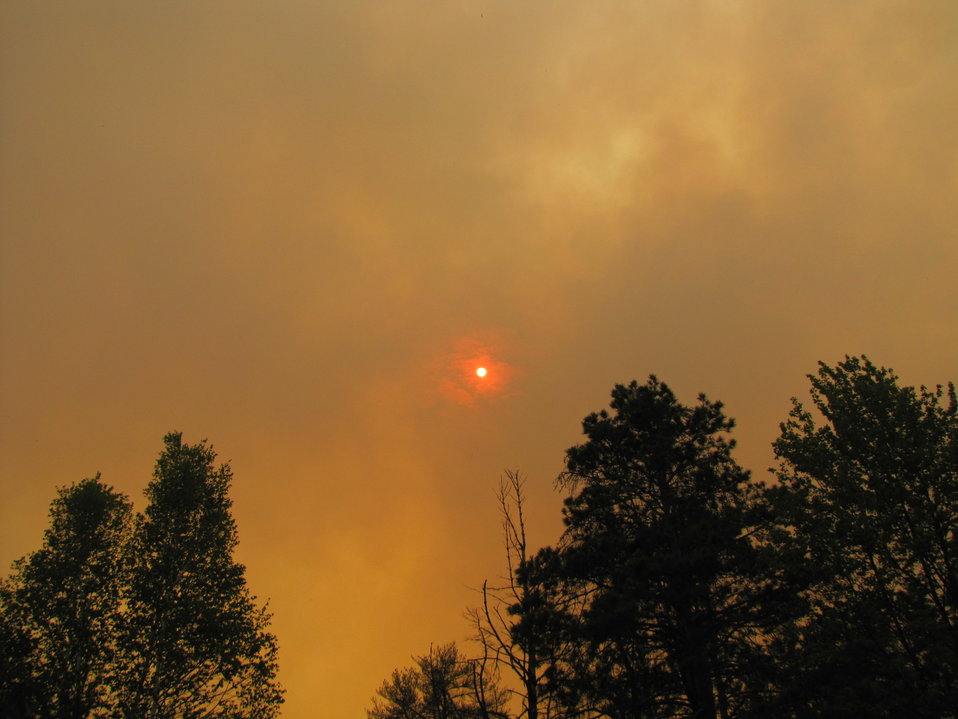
A Sky Full of Smoke

The sun being blocked out by smoke.